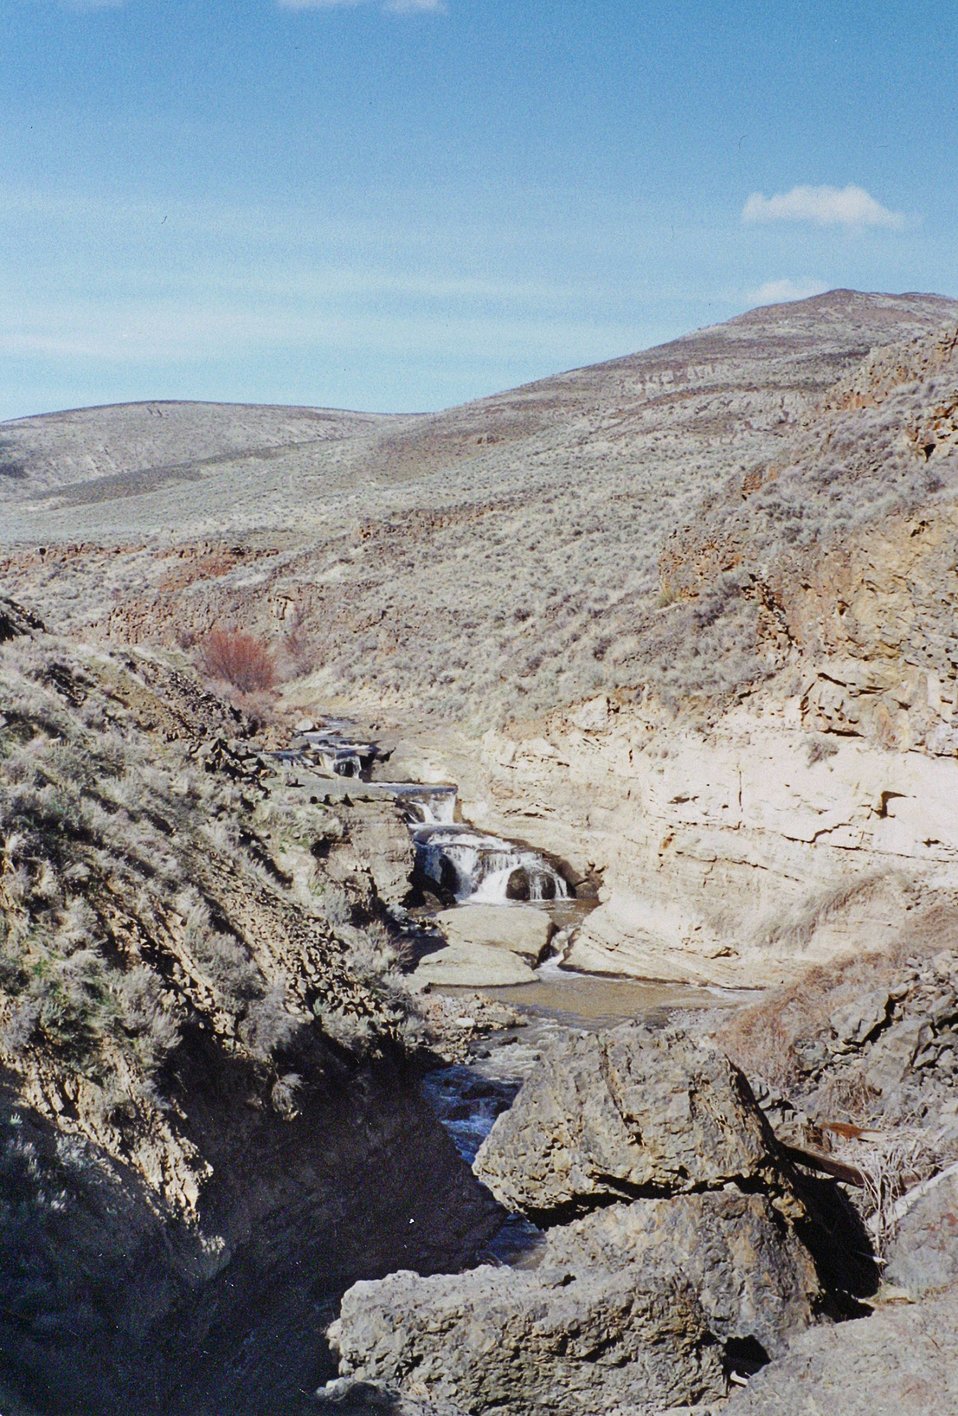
Douglas Creek, Chopaka, Wenatchee, March 1996